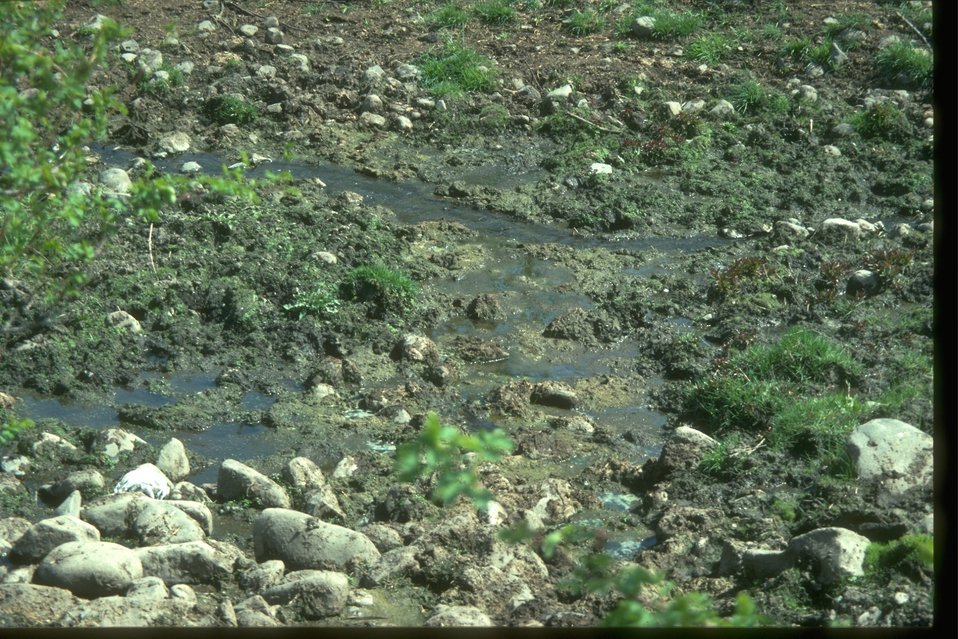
Close up of a trampled spring.